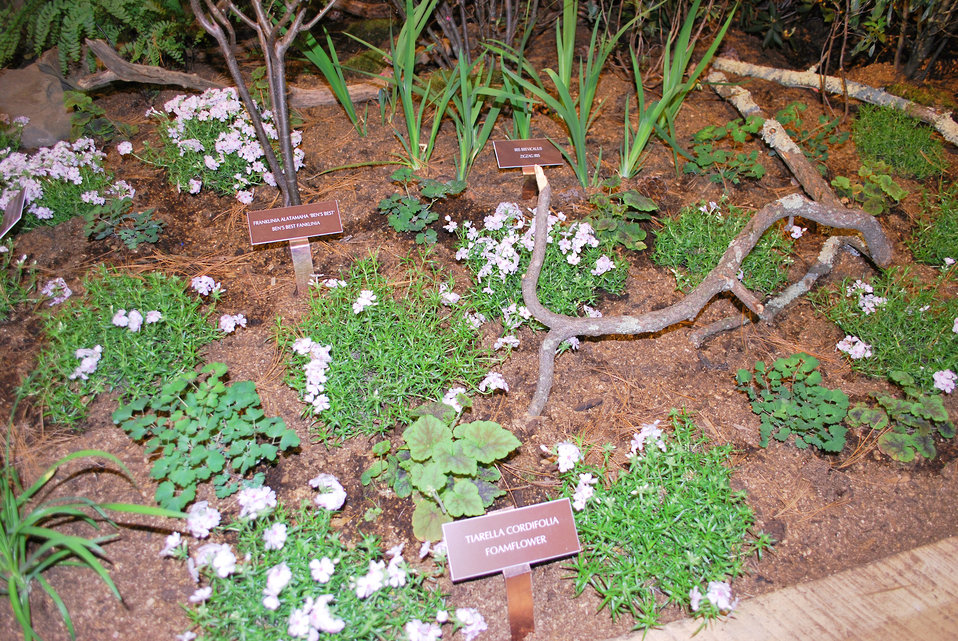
March 4, 2013 - Mid-Atlantic Region, Native Ground Cover

A variety of low-growing ground covers native to the mid-Atlantic region. These would be found in woodland areas. These plant were part of the EPA exhibit at the 2013 Philadelphia Flower Show which gave visitors ideas as to how they might use native plants in their own landscapes.

Invasive species means an alien species whose introduction does or is likely to cause economic or environmental harm or harm to human health.

This EPA display at the 2013 Philadelphia Flower Show demonstrated how native plants can be used to create a beautiful garden that reduces our environmental impact, conserves resources and provides habitat for wildlife.

EPA Resources on Invasive Species

More EPA resources, species photos, and information about the 2013 Flower Show